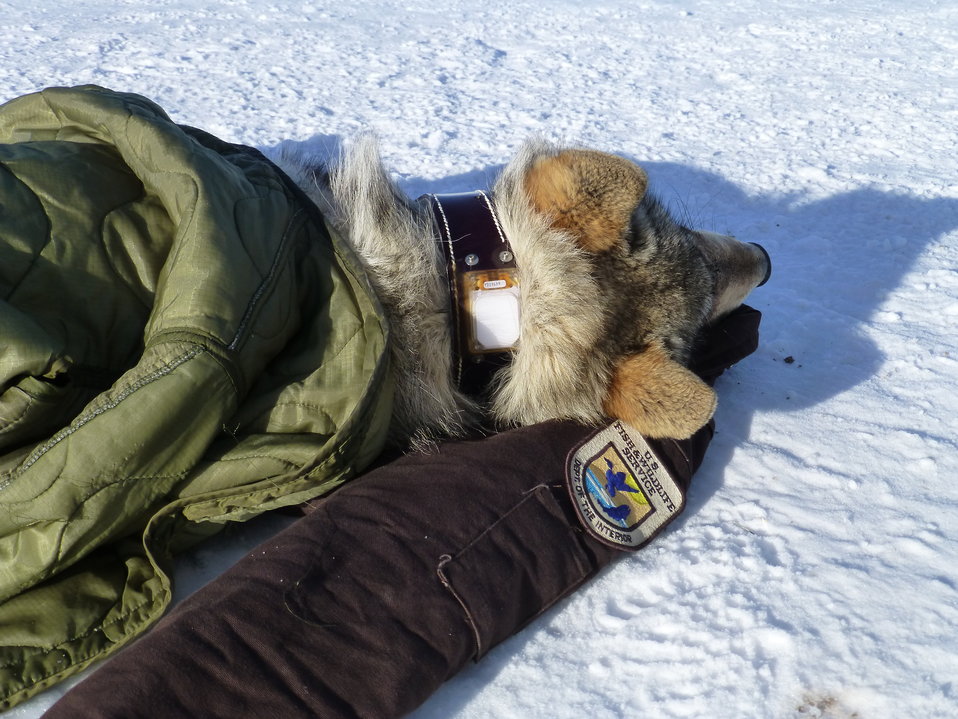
Taking a Little Longer

Two biologists remained on site when the data collection was complete to ensure the wolves got safely back up on their feet when the immobilization drug wore off. This wolf was the last to recover from the effects of the drug. The biologists monitored its temperature to ensure the animal didn't get too cold during the recovery phase and used jackets to cover it while they waited. The wolf's new collar can clearly be seen in the picture.